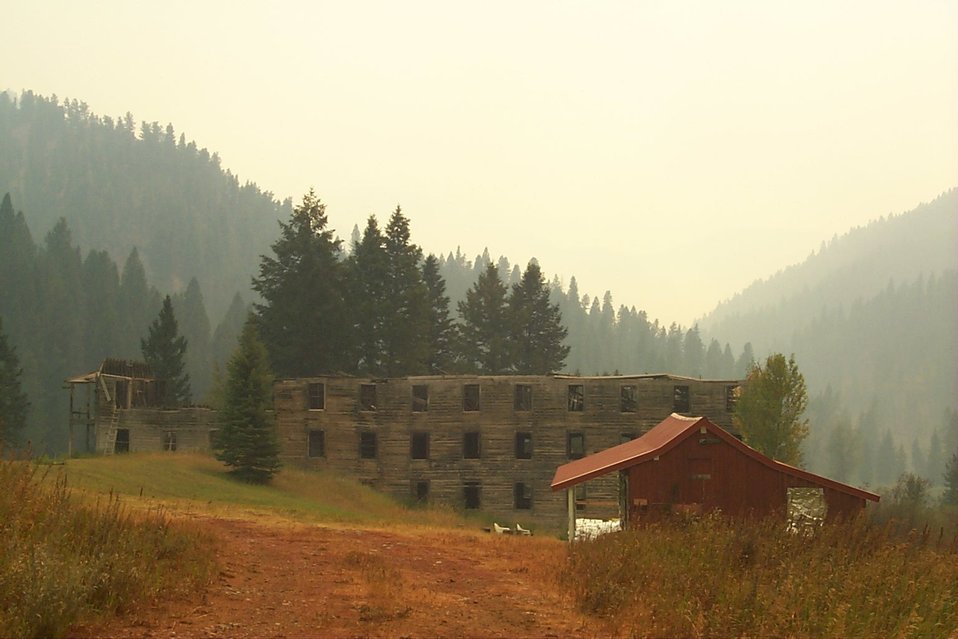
Urban interface Fire Clearwater Fire Salmon Field Office USRD Upper Snake River District